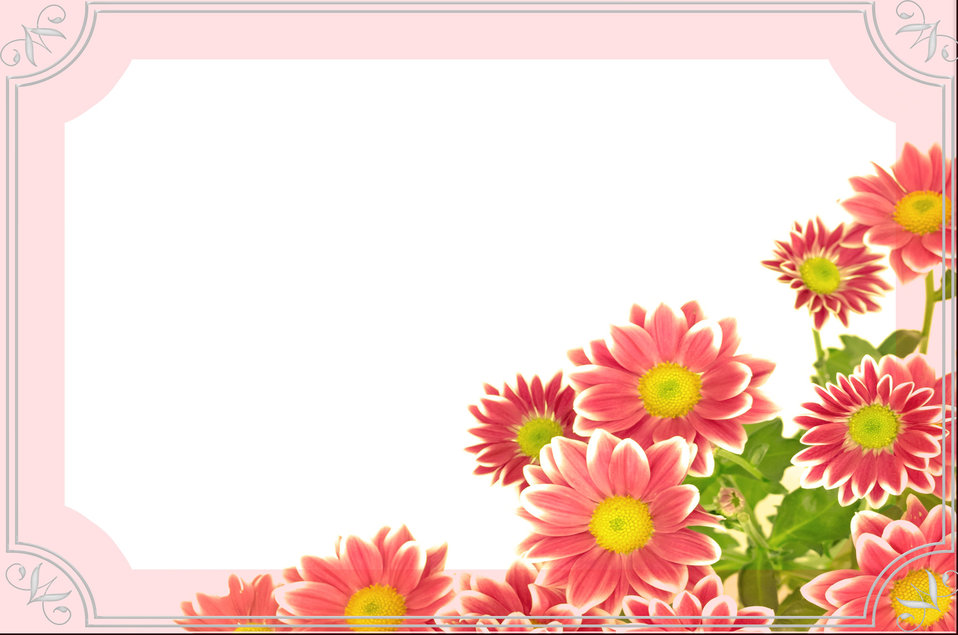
Flowers - wishes card.